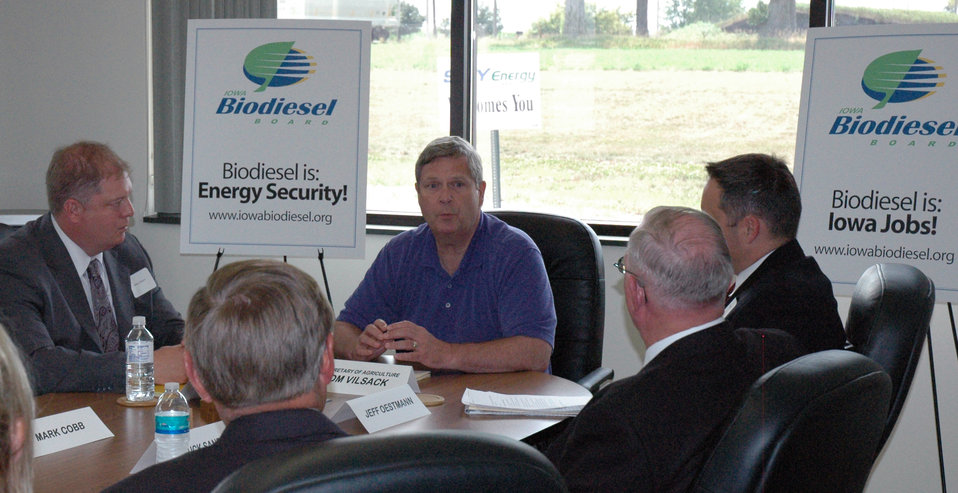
Agriculture Secretary Tom Vilsack meets with renewable energy stakeholders to discuss their role in creating new energy opportunities and jobs that will assist with the revitalization of rural America in Mason City, IA on Monday, July 23, 2012.